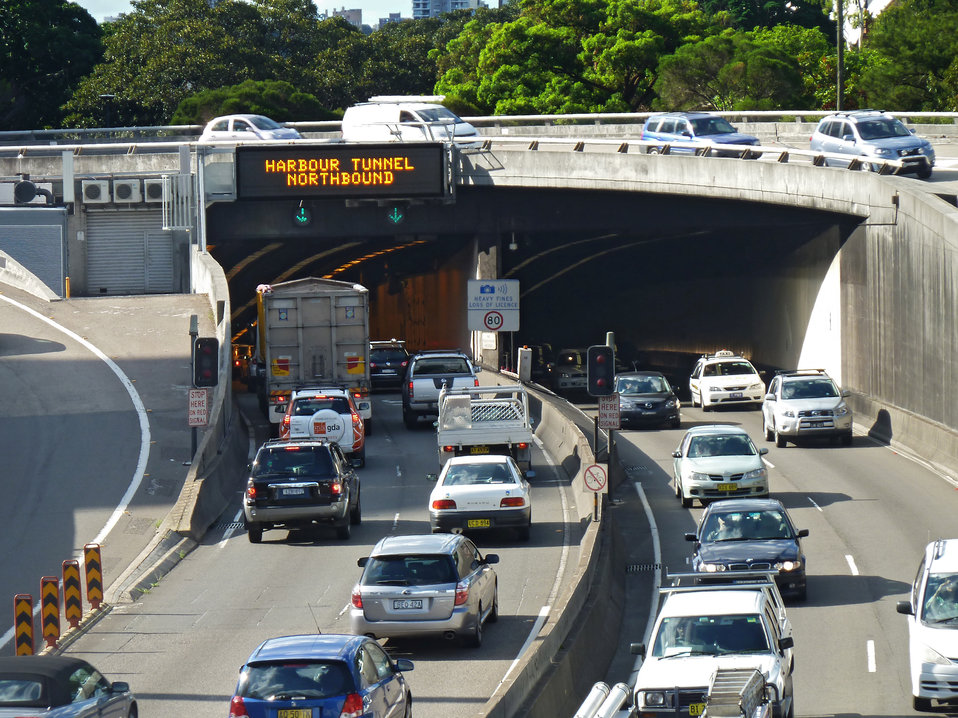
Cahill Expressway and Sydney Harbour Tunnel, from Conservatorium Road, Sydney, New South Wales, Australia.